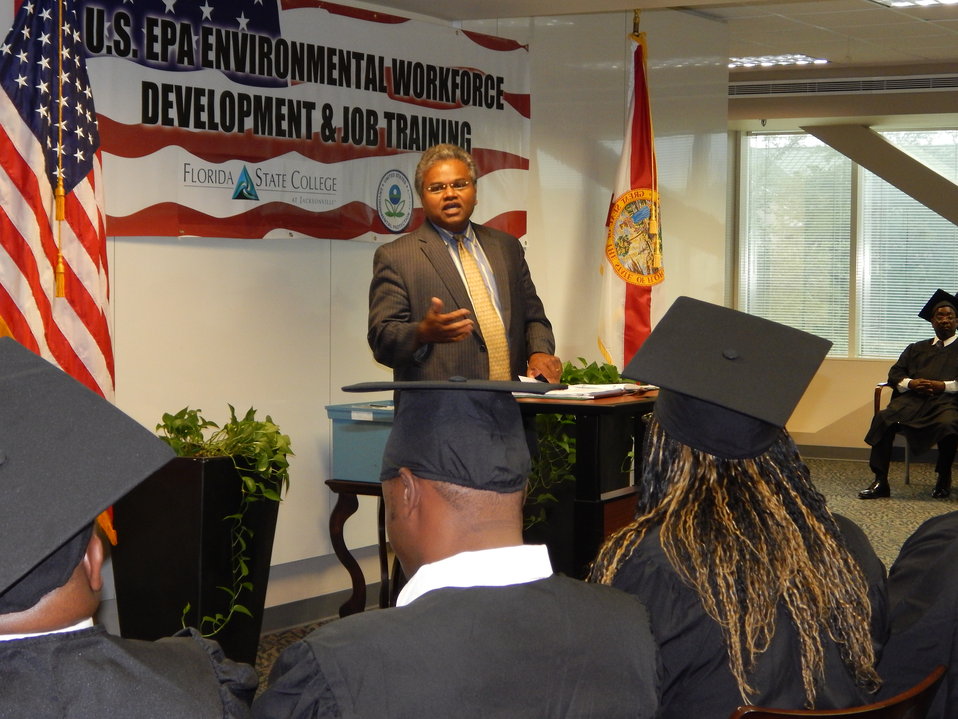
Mathy Stanislaus at Florida State College

EPA Assistant Administrator Mathy Stanislaus talks to graduates of the Florida State College at Jacksonville’s Environmental Workforce Development and Job Training program. EPA grants help organizations set up programs like this to recruit, train, and place unemployed and under-employed people in the environmental field.